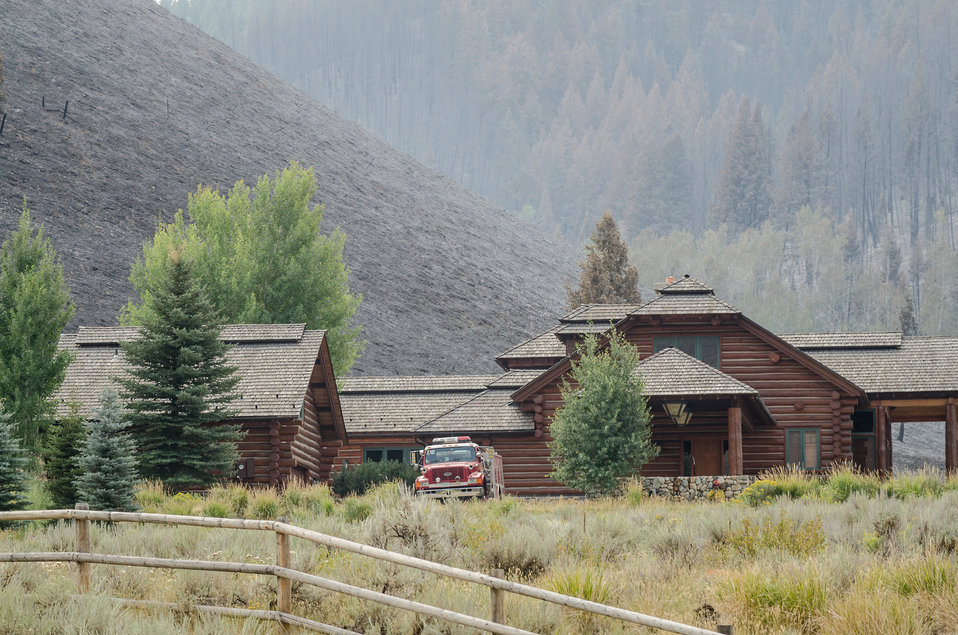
Thanks to the efforts of Wildland Firefighters, support crews and other first responders, homes and residential communities were (with few exception) saved from major damage, from the Beaver Creek Fire, near Hailey, ID, in the interface of U.S. Department of Agriculture (USDA) Forest Service (FS) and Sawtooth National Forest and Bureau of Land Management (BLM) lands, on Wednesday, Aug 21, 2013. In this community, major sections of hillside were charred, some suffered burnt trees, grass lands and fences.